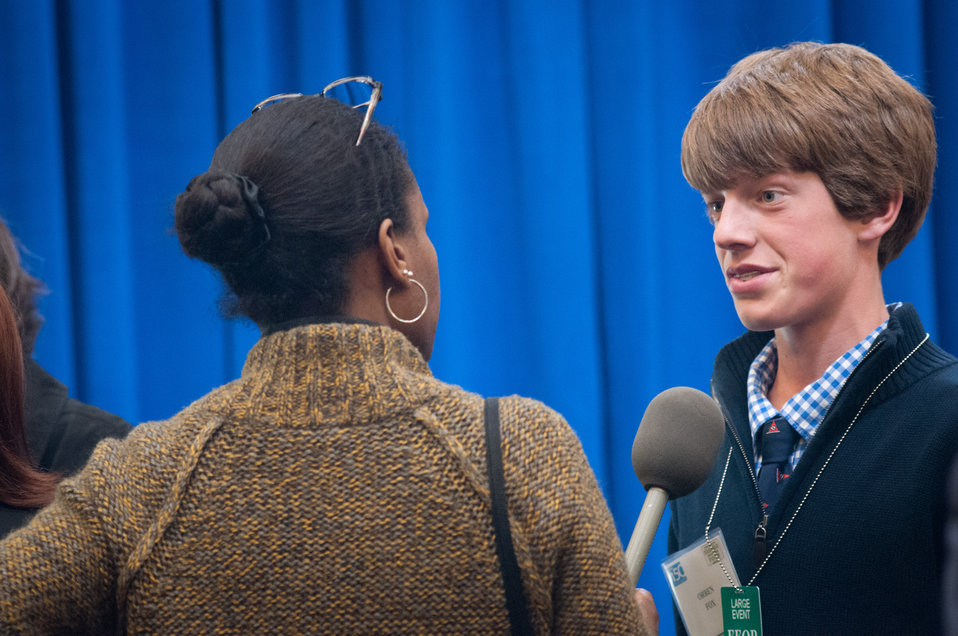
Agriculture radio broadcaster Susan Carter (left) interviews Orren Fox, (aka @happychickens) a teenage chicken/bee keeper, from Boston, who spoke about agriculture careers, following a Know Your Farmer COMPASS twitter event at the White House, in Washington, D.C., on Monday, March 5, 2012. The virtual conversation event was a continuation of a National Conversation on Local and Regional Food projects and how they offer economic opportunities to local farmers, ranchers and food entrepreneurs. Foxx learned where his food comes from, by raising chickens in his backyard since he was nine. Now he has 32 chickens, 4 ducks and over 200,000 bees.